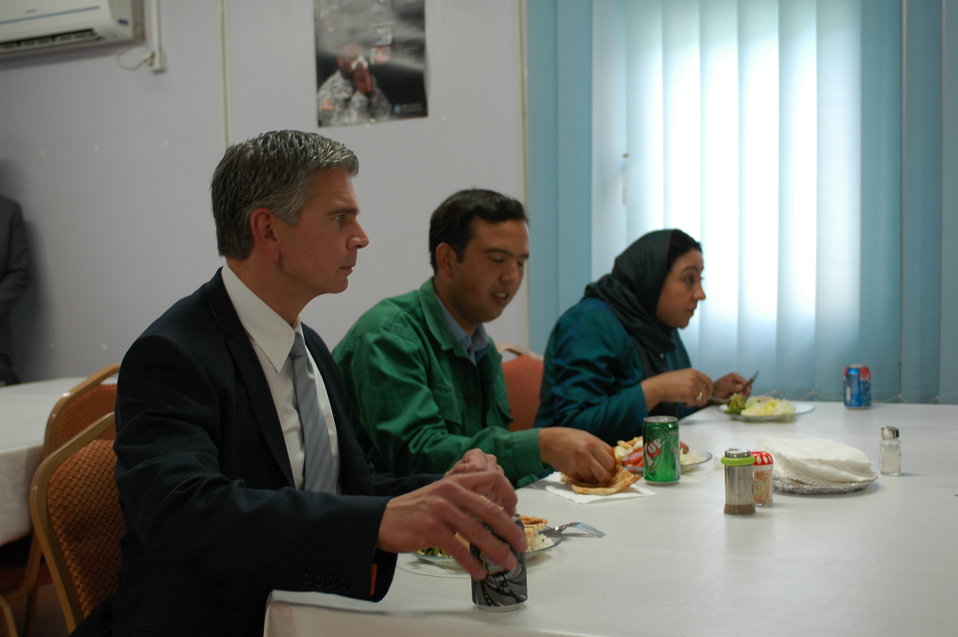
105 MW Tarakhil Power Plant Handover